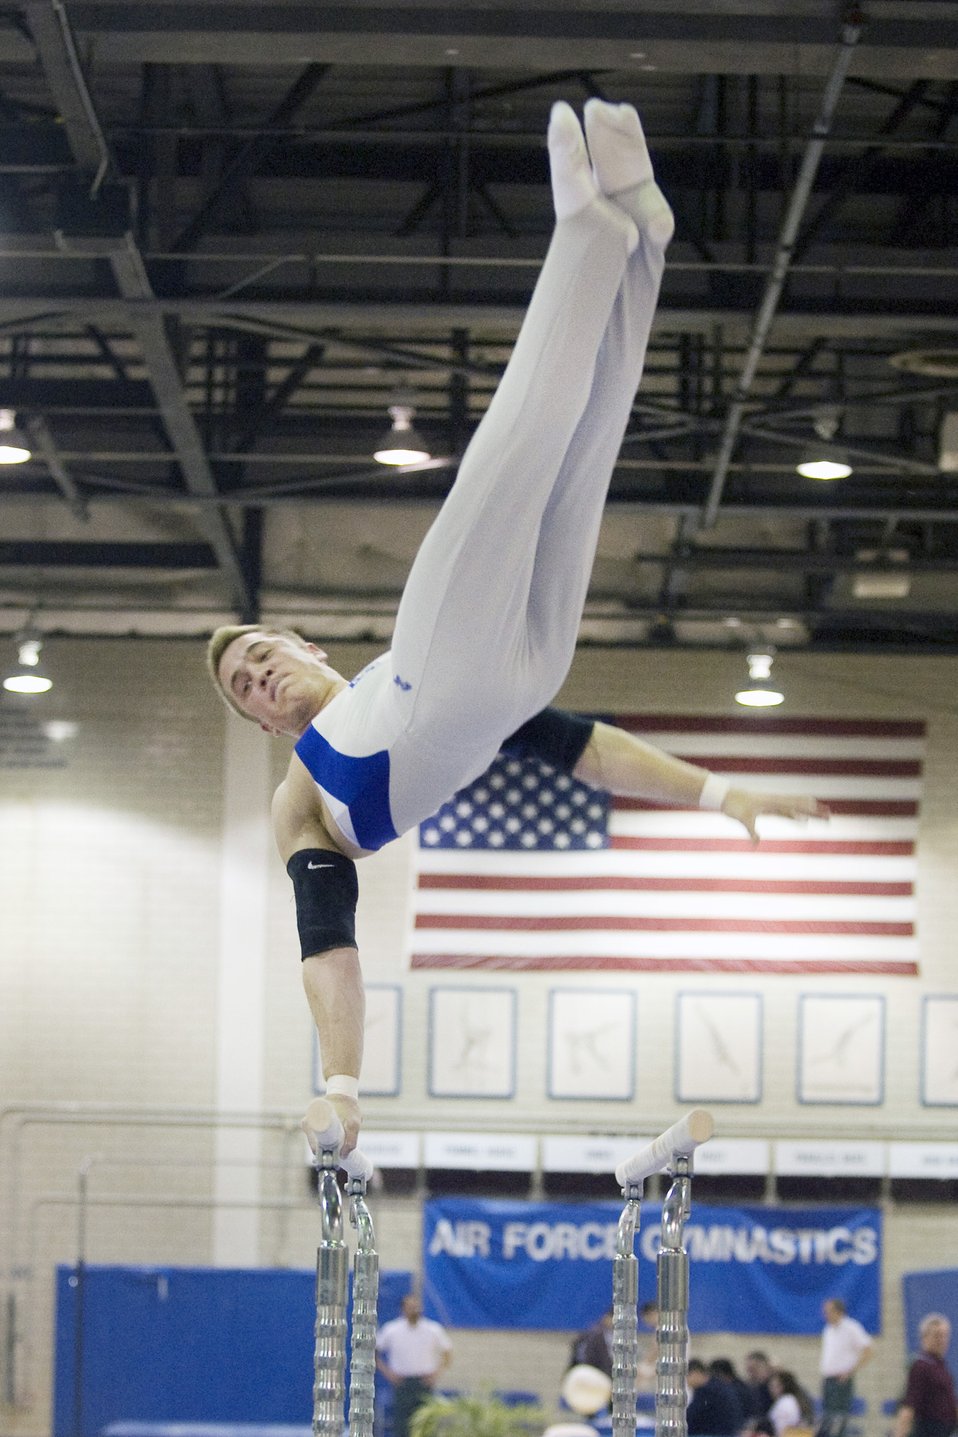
USA Gymnastics Championships

Falcon junior Nash Mills competes on the parallel bars during the USA Gymnastics Championships held at the U.S. Air Force Academy's Cadet Gym in Colorado March 27, 2010. The routine earned him a national collegiate title just one day after claiming the all-around title.